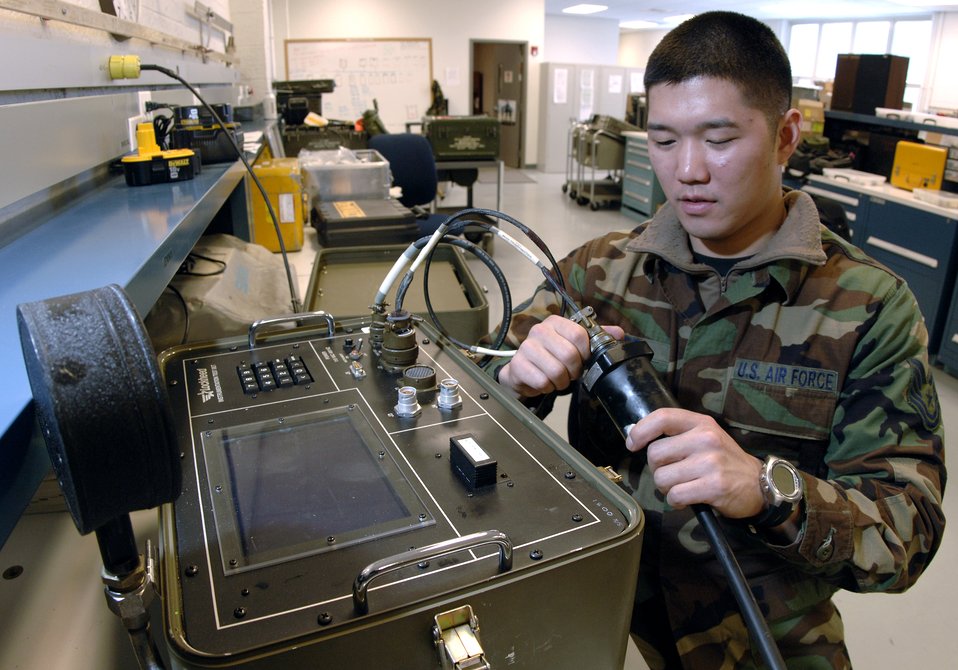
Guard wing makes mark on history

Tech. Sgt. James Lee connects an oil pressure transmitter to a bench tester. The transmitter sends oil pressure readings to the cockpit of the HH-60 Pave Hawk. Sergeant Lee is a guidance and controls systems specialist with the New York Air National Guard's 106th Maintenance Squadron.